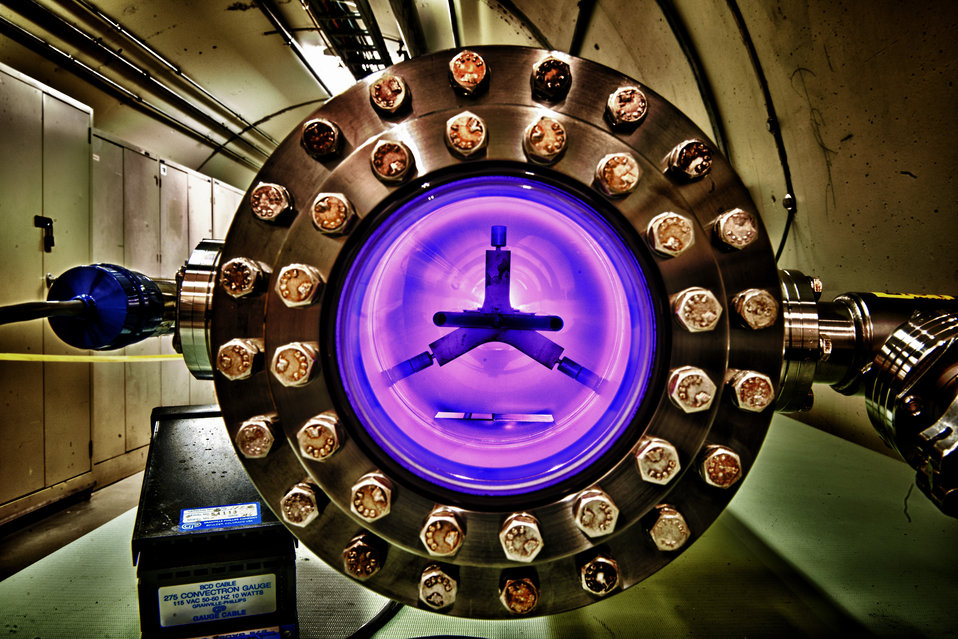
Titanium Nitride (TIN) physical vapor deposition coating of the inside of a beam tube at Fermi National Accelerator Facility.